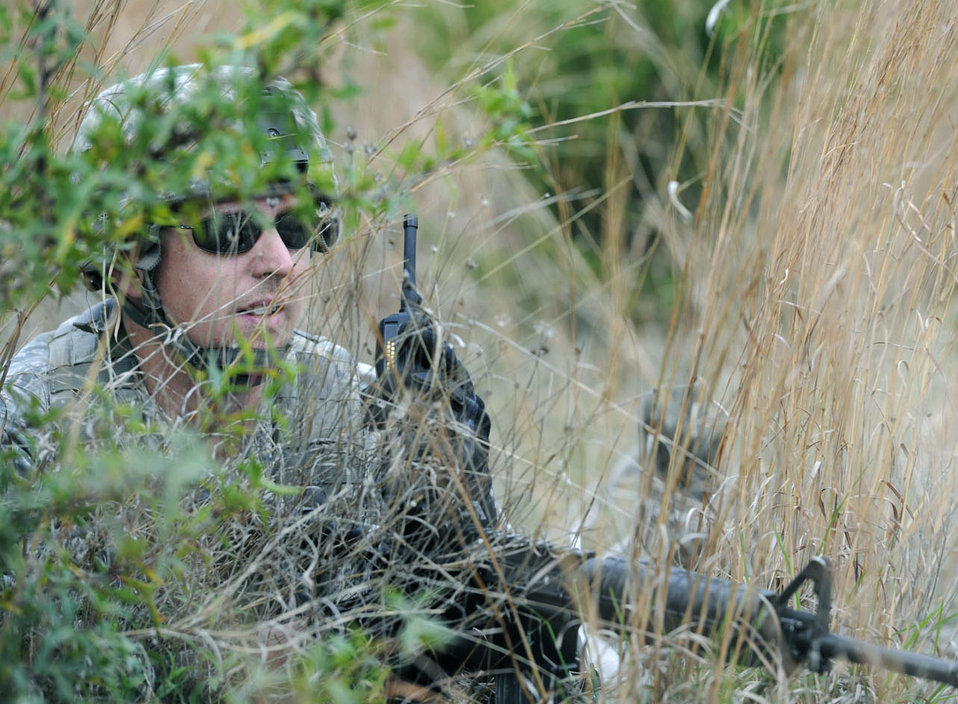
Spreading the news

Tech. Sgt. Joe Dolph relays information to fellow Airmen March 22, 2011, during a combat leaders course at Camp Bullis, Texas. Dolph is assigned to the 27th Special Operations Security Forces Squadron at Cannon Air Force Base, N.M.